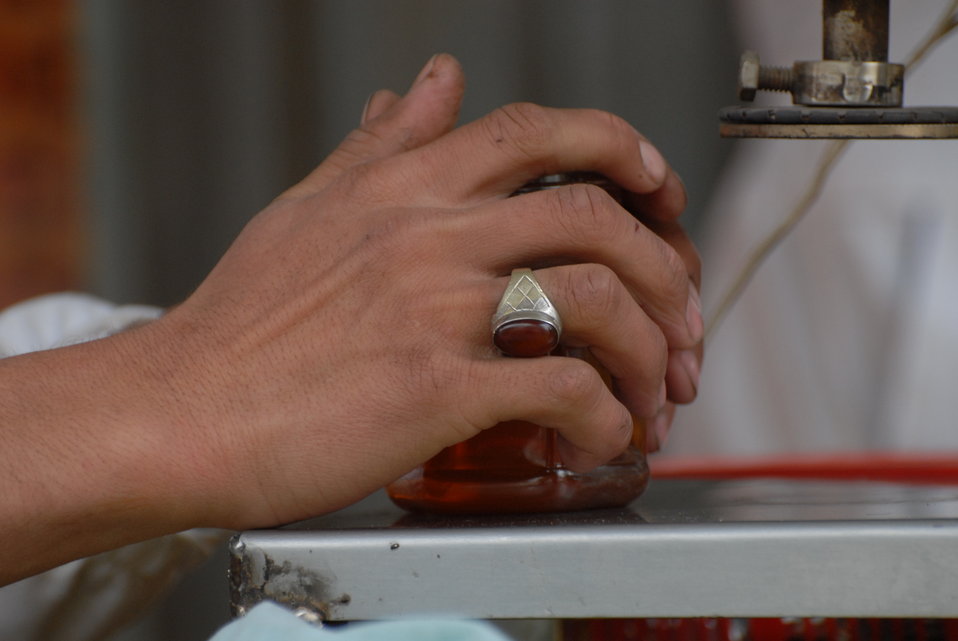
'On the Road' in Nangarhar Province